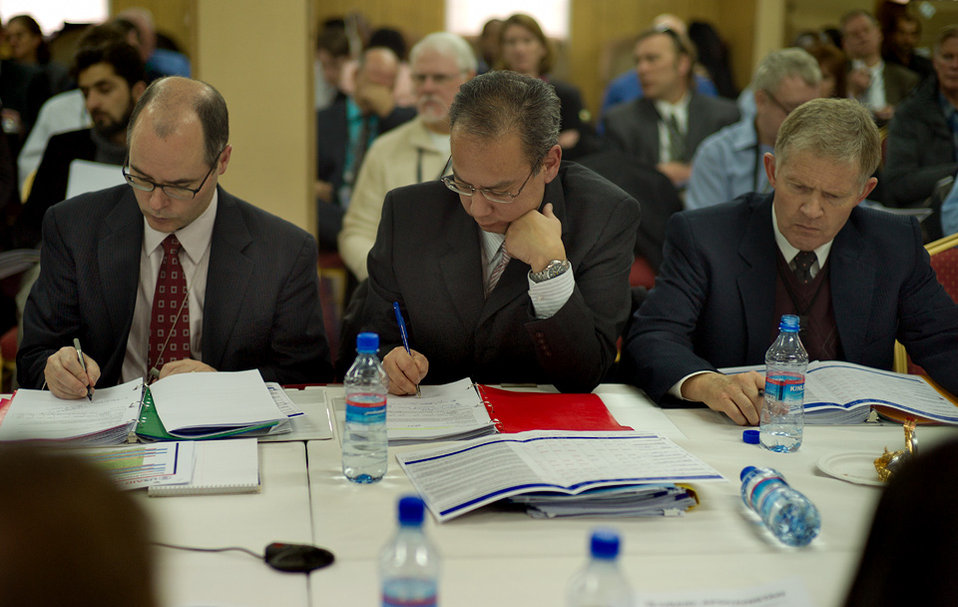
Greg Burton, Robert Lopez, Jed Barton